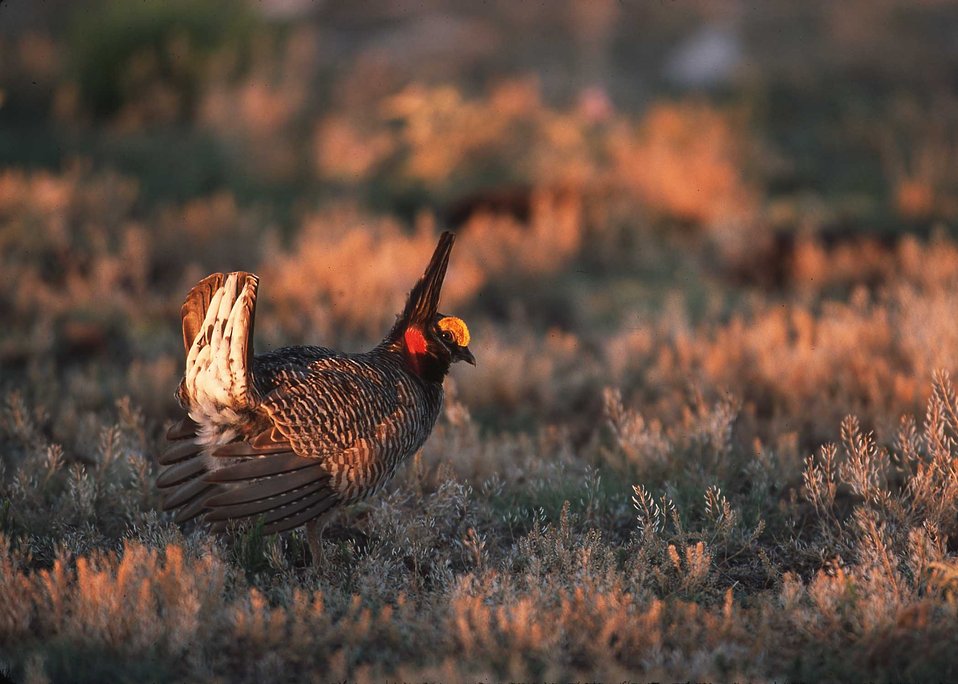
Lesser prairie chicken in Eastern New Mexico.